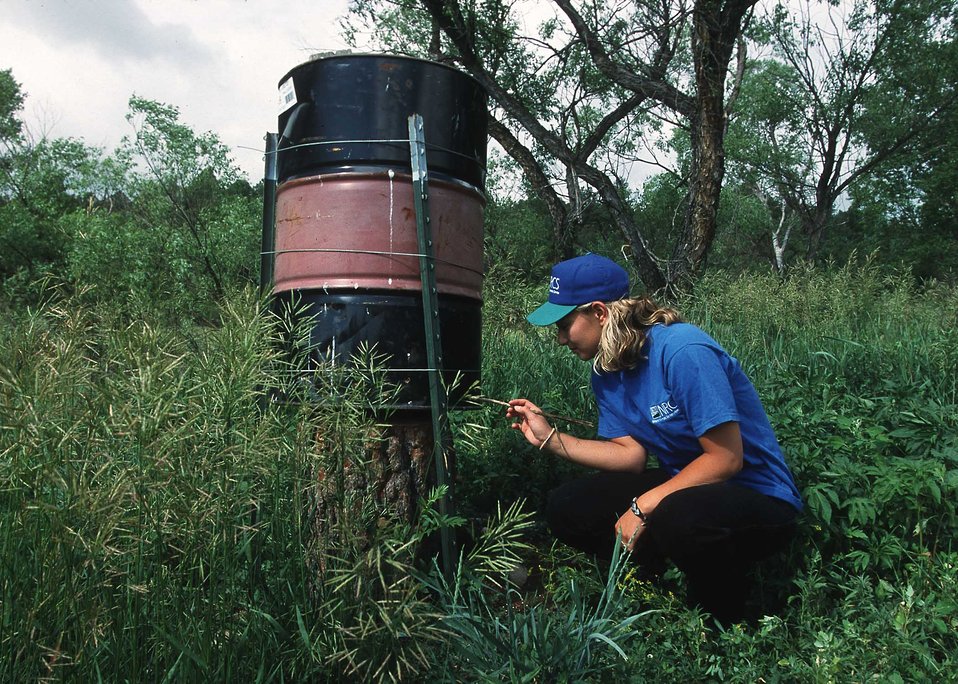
Wildlife feeder near Spanish Peaks, Colorado.